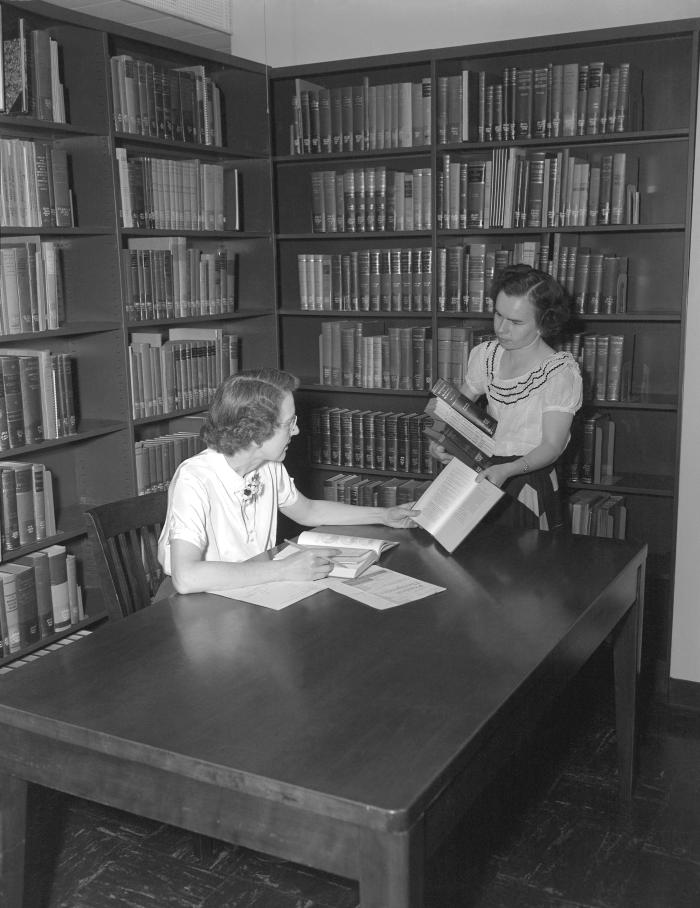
This 1952 photograph showed two Centers for Disease Control employees as they were working in the organization's Chamblee, Georgia campus library, which is also known as the 'CDC Information Center', located in Northeast Atlanta.